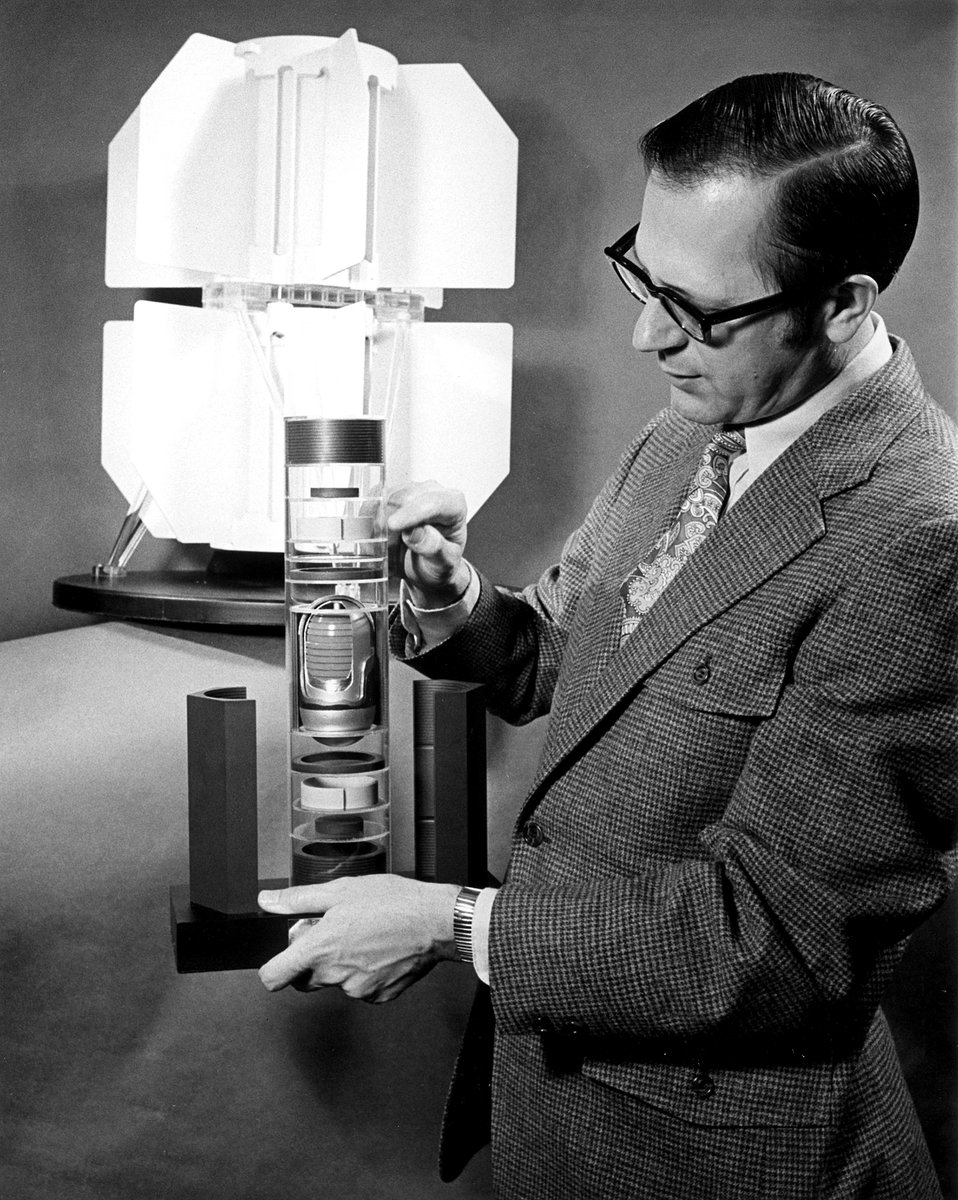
A model of the AEC-developed fuel capsule for each of the four nuclear generators to power the NASA Pioneer spacecraft to Jupiter in early 1972 is displayed by Bernard J. Rock, AEC SNAP-19/Pioneer radioisotope thermometric generator program manager.